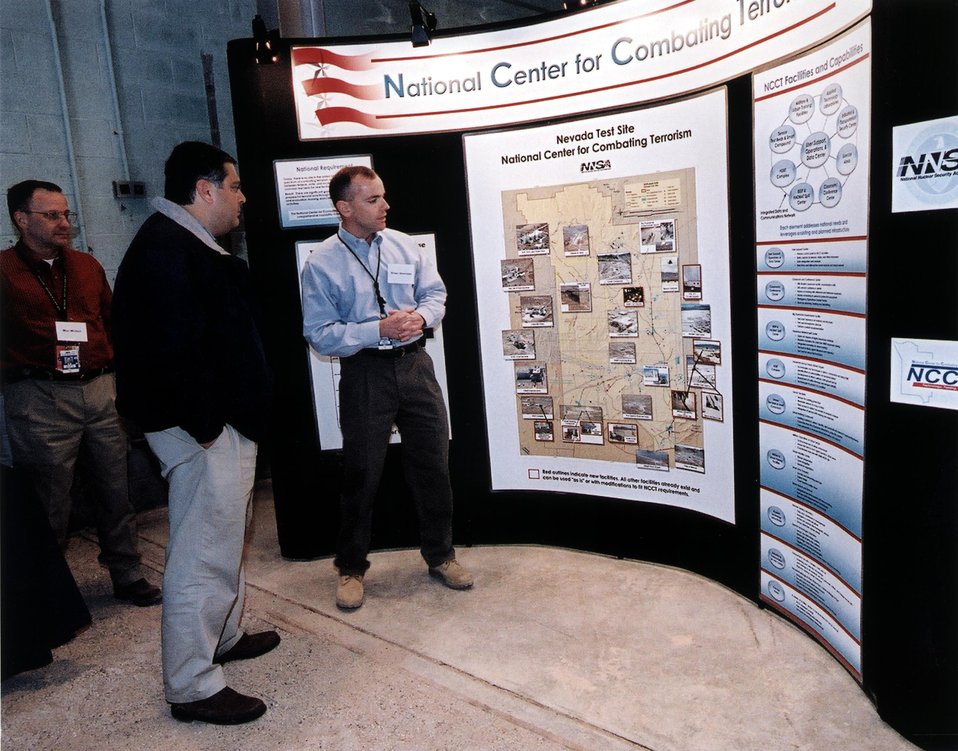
SECRETARY OF ENERGY ABRAHAM AT THE NEVADA TEST SITE BEING BRIEFED ON THE NATIONAL CENTER FOR COMBATING TERRORISM.